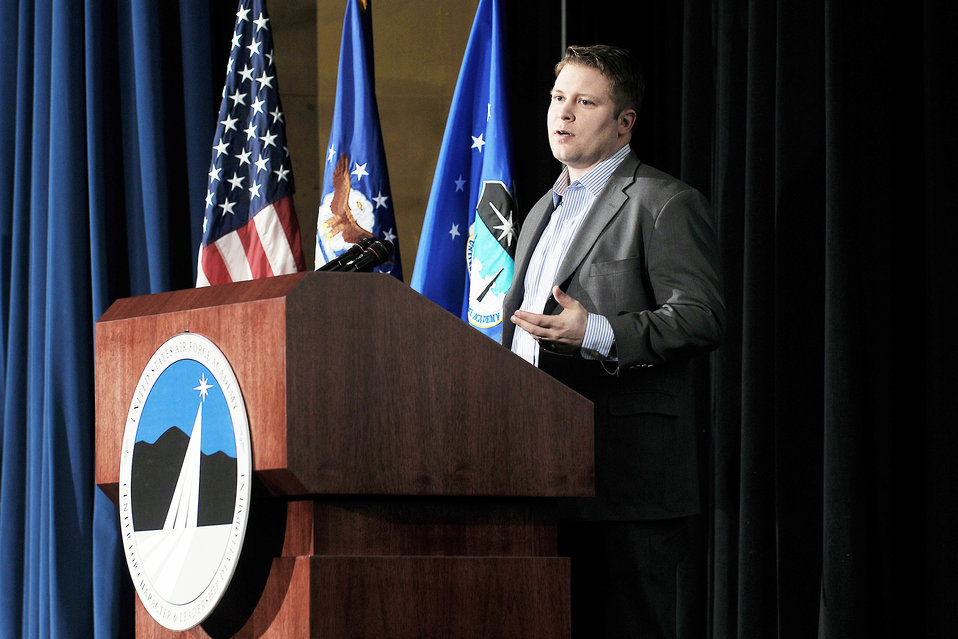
Speakers motivate cadets

Former Army Ranger Capt. Nate Self speaks during a keynote session at the 17th-annual National Character and Leadership Symposium at the U.S. Air Force Academy Feb. 18, 2010. The annual event is regarded as one of the premier national symposiums in the area of character development. Captain Self is a veteran of the battle on Roberts Ridge and a recipient of a Silver Star, Bronze Star and Purple Heart.